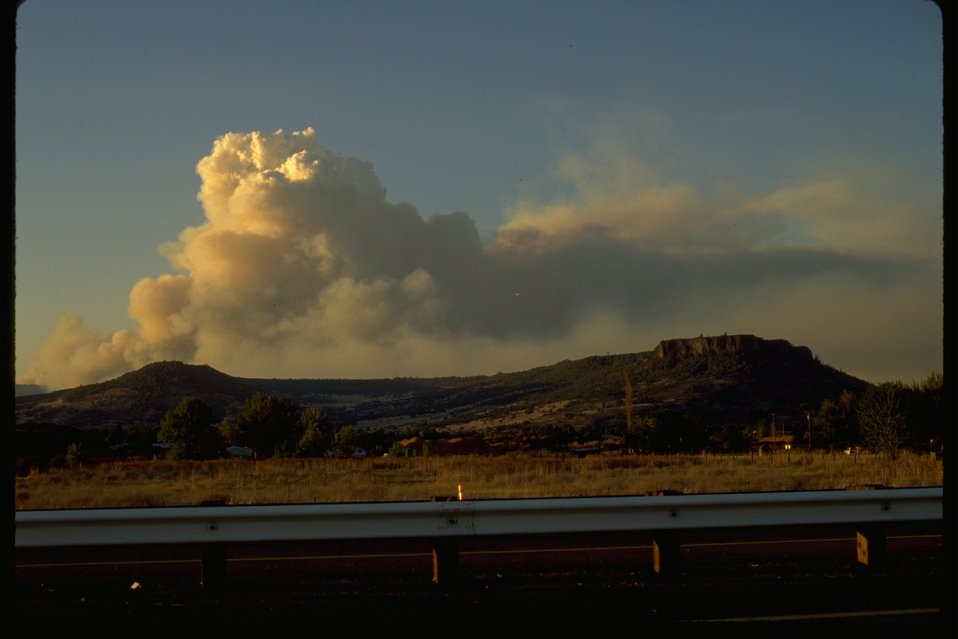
Smoke plume from Hull Mountain fire.